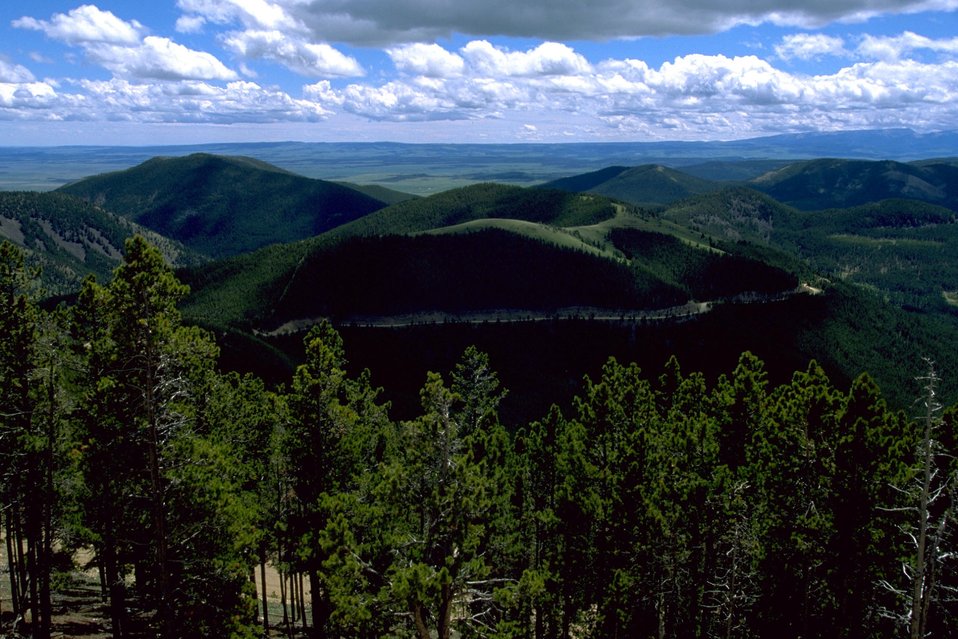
Clouds over the Judith Mountains